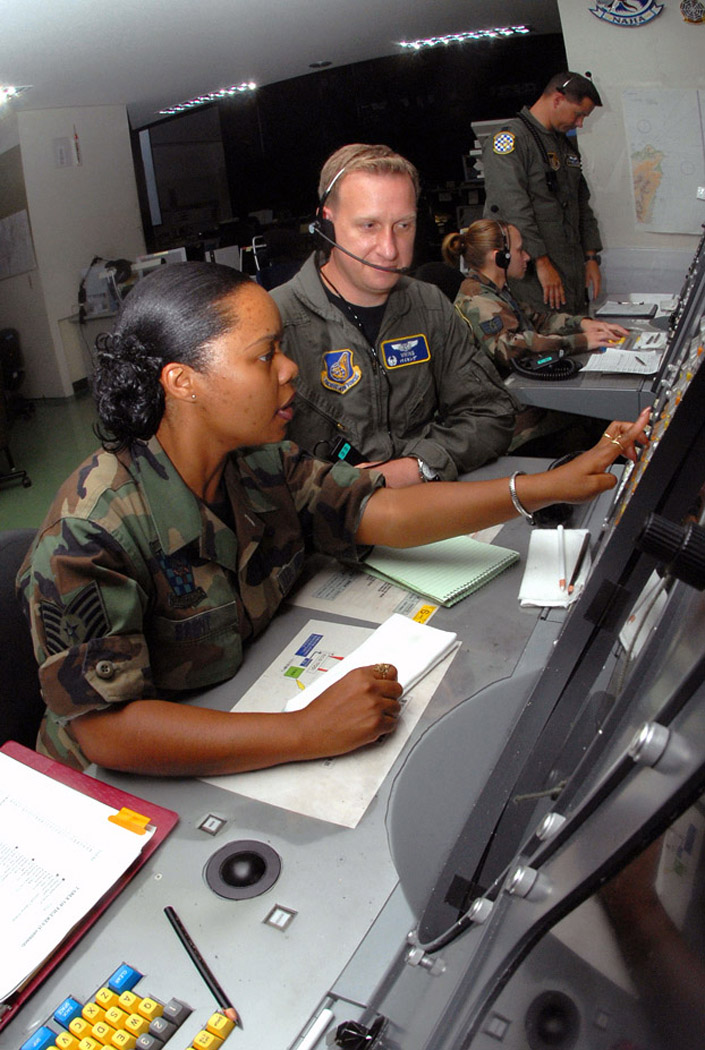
Small Kadena unit, big Air Force job

Tech. Sgt. Connie Brent and Maj. Charles Dennison control a large force exercise using the Base Air Defense Ground Environment system at Naha Air Base, Japan. Sergeant Brent relays time-sensitive information to Major Dennison, the mission crew commander, who controls the air space by guiding aircraft into different sections according to the mission plan. They are assigned to the 623rd Air Control Flight.